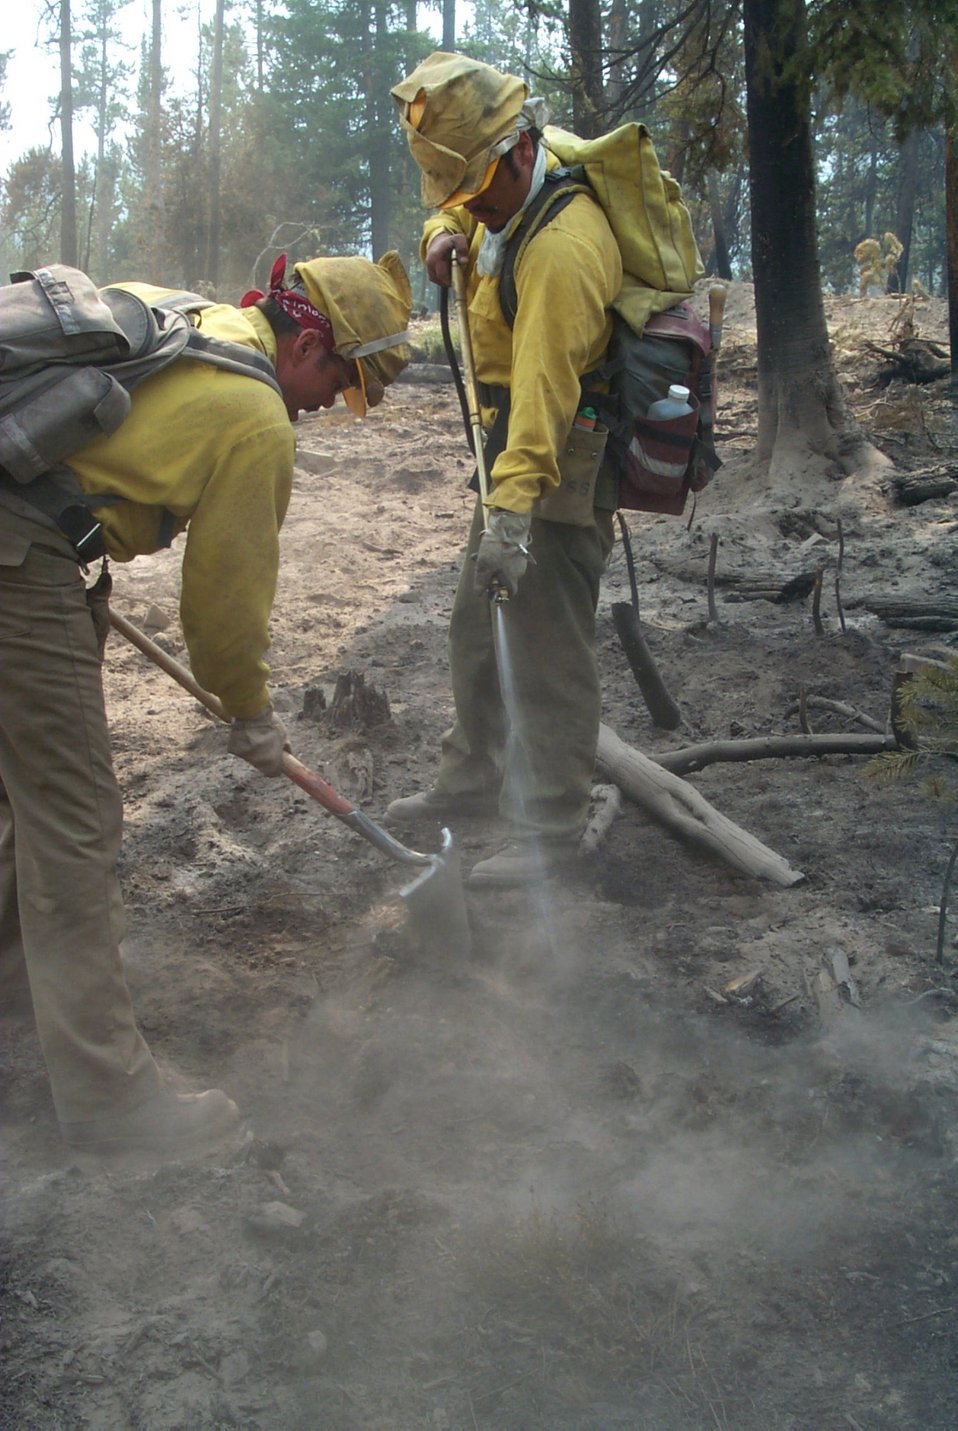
Fire crew Fire Clearwater Fire Salmon Field Office USRD Upper Snake River District